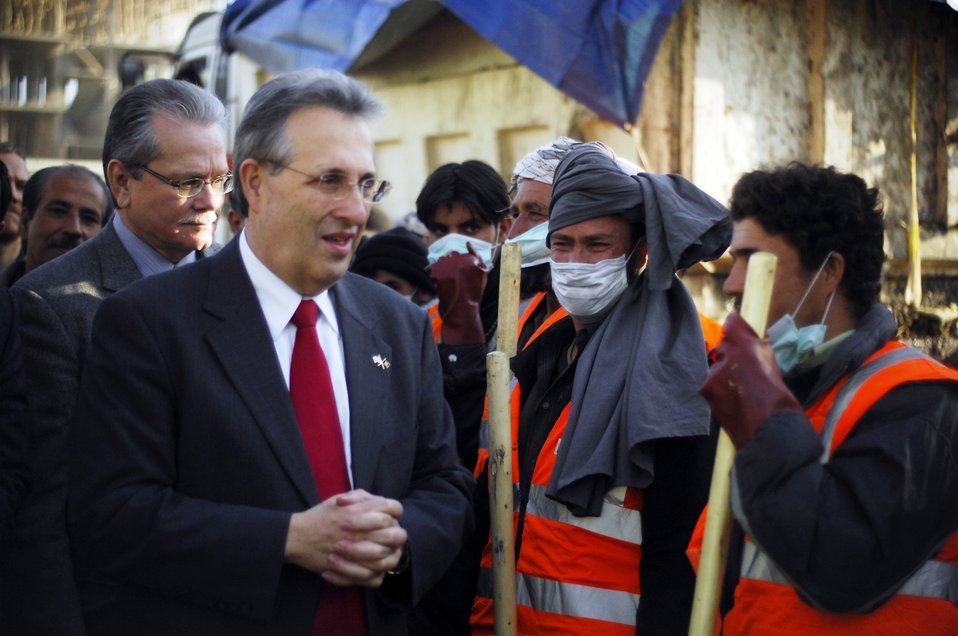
Care08